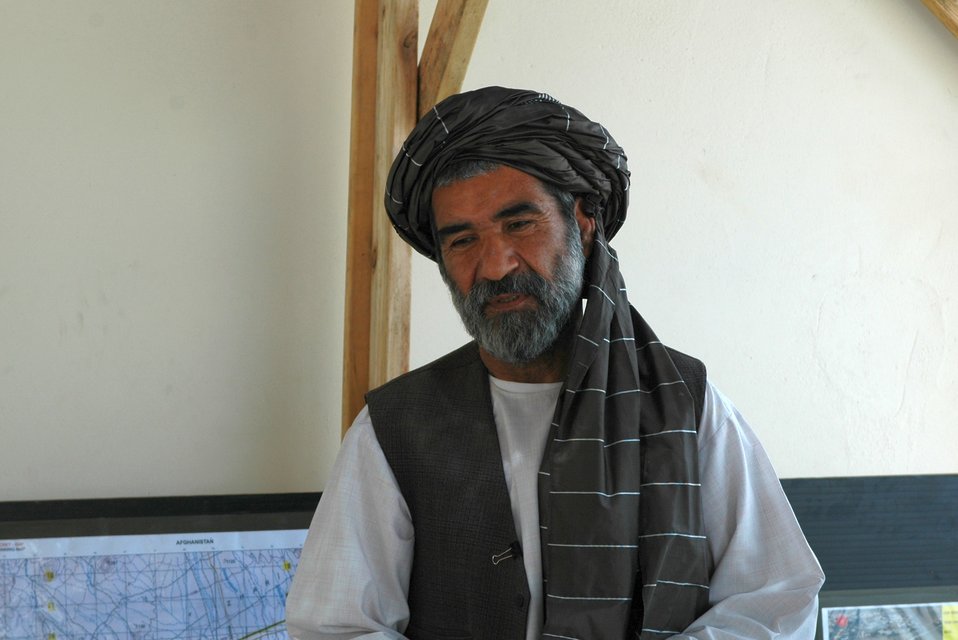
CODEL Berman